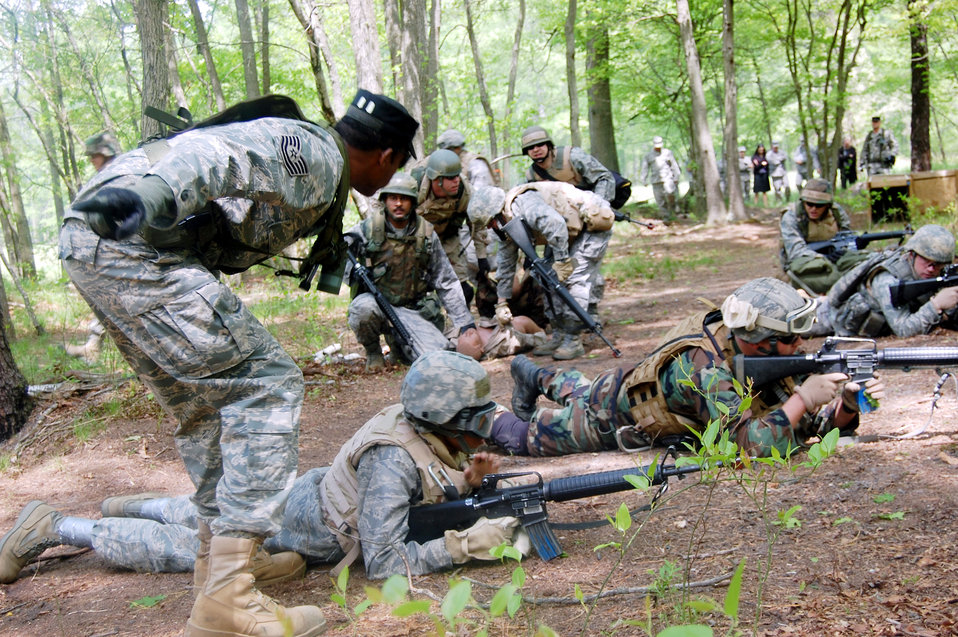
Injured Airman credits training for saving her life

Tech. Sgt. Bernard Wilson provides instruction to students in the Advanced Contingency Skills Training Course as they respond to a scenario requiring response to